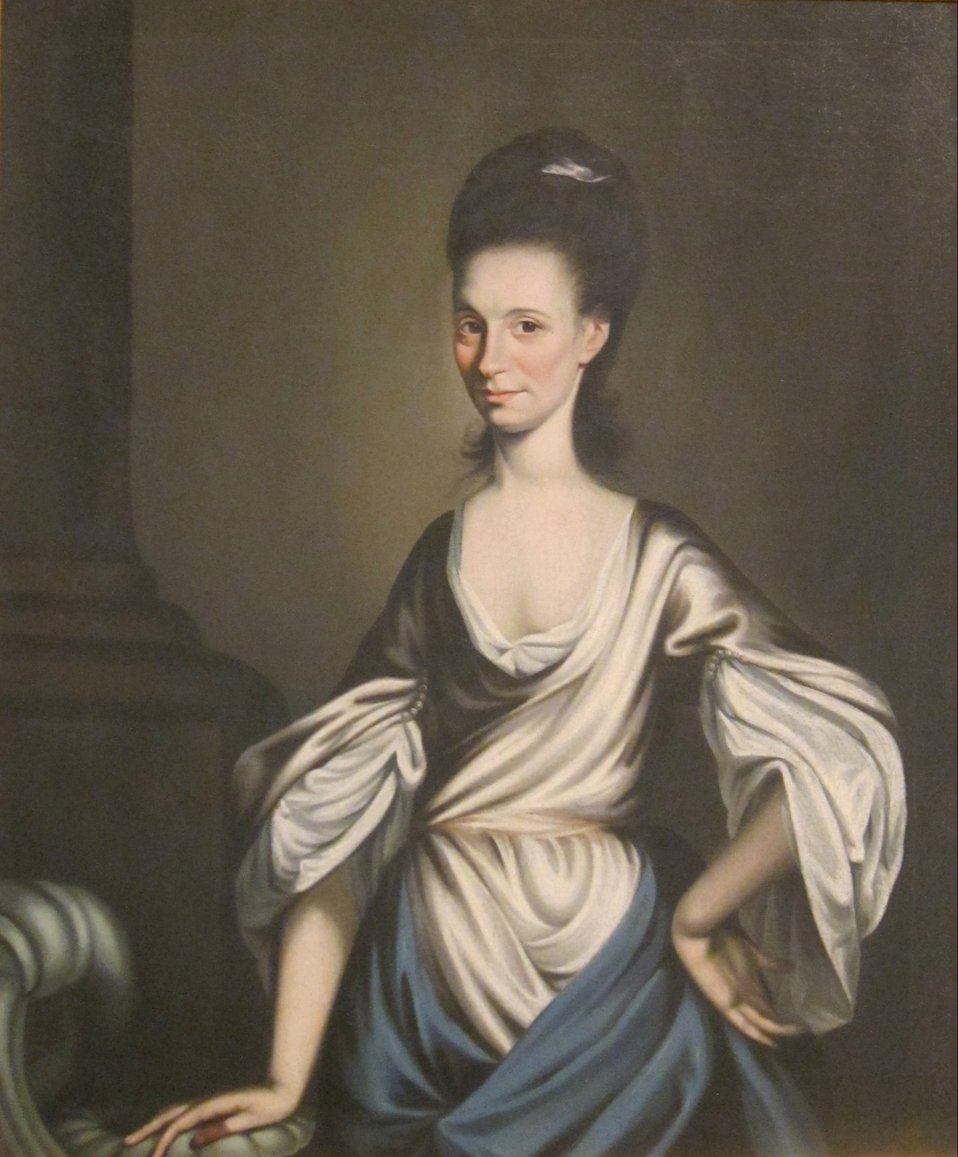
Portrait of a Young Lady, oil on canvas painting attributed to Samuel King, c. 1765-70, Dayton Art Institute